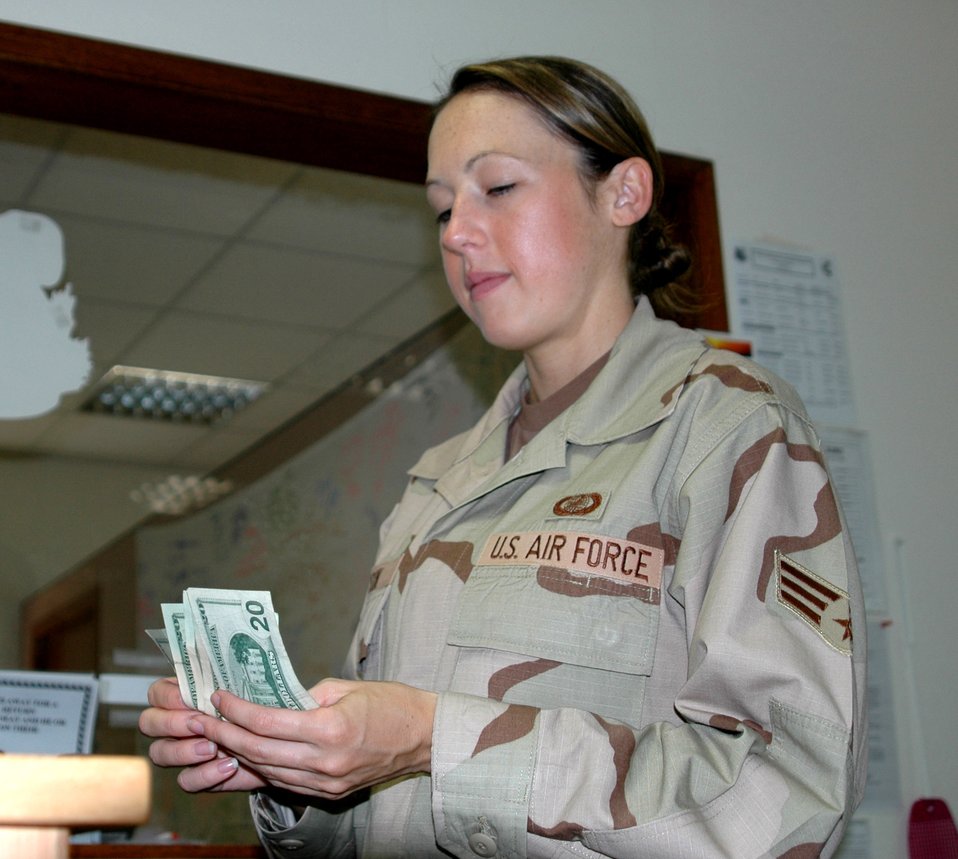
Fighting Finance Folks

SOUTHWEST ASIA (AFPN) -- Senior Airman Elizabeth Larson counts money for a customer at the finance office here. The 14 members of the finance office have many duties. They include: processing vendor payments, collecting money into the savings deposit program, processing paperwork for the entire region including travel vouchers, starting entitlements and giving the troops a customer-service friendly forum to ask questions about their finances.